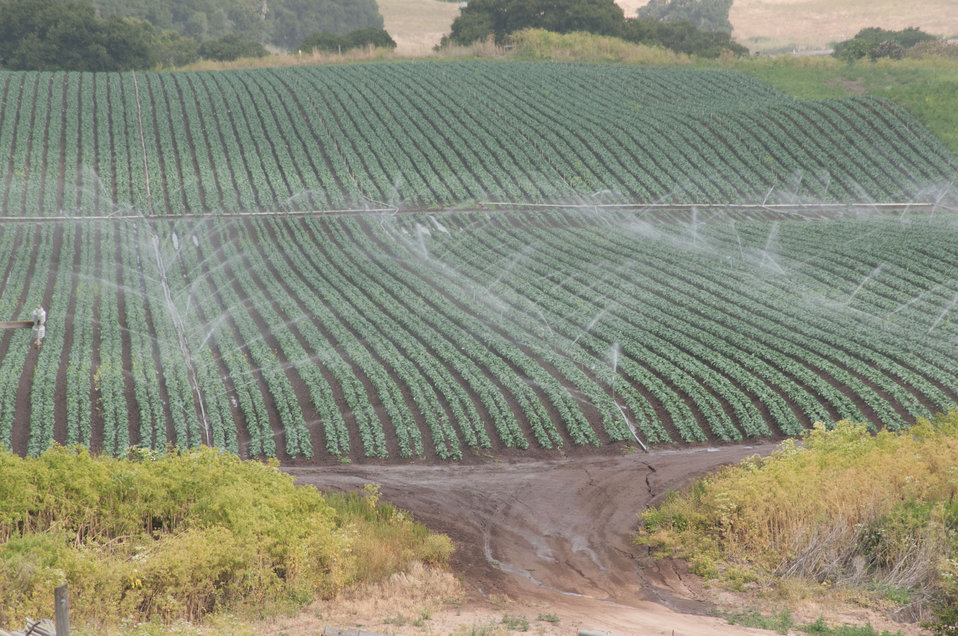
Conventional sprinkler irrigation at Leafy Greens, operated by farmer Tom Heess, in the Salinas Valley, California on Thursday, June 16, 2011. Leafy Greens grows row crops of lettuce, broccoli, cauliflower sweet peas and seed beans. He uses rotational crop plantings to control weeds and plant disease. When a plot of land is at rest, he plants a cover crop of barley and rye grass because the roots hold the topsoil reducing erosion of the soil. He is converting his irrigation system from conventional sprinklers (seen) to micro irrigation. Where one system produces runoff and erosion of the soil; the other has little or no erosion, less maintenance, easy harvest and less water is needed. When seasonal rains produce runoff, the silt that flows with it is caught in sediment ponds (left and right of pathway). The ponds have grass, bushes and trees to hold the structure and allow the silt to settle. Spillways lead to holding ponds and eventually the Salinas River, a tributary of the Monterey Bay National Marine Sanctuary. So far, because of its design and efficiency, no water has made it to the river.